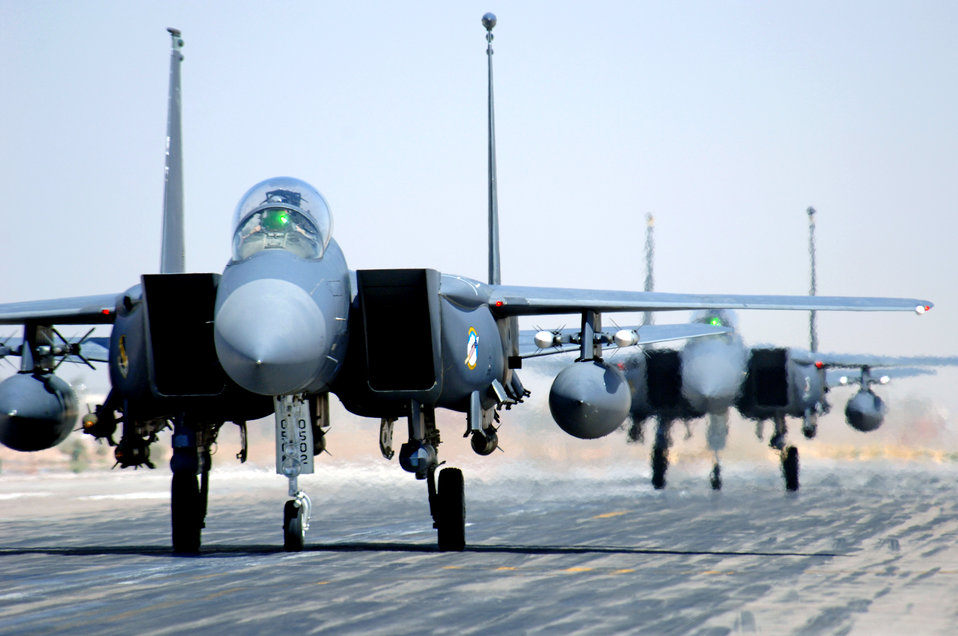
Flying missions support Operation Iraqi Freedom

F-15E Strike Eagles taxi at Balad Air Base, Iraq, after an Operation Iraqi Freedom mission on Monday, June 12. The aircraft are deployed from Seymour Johnson Air Force Base, N.C.